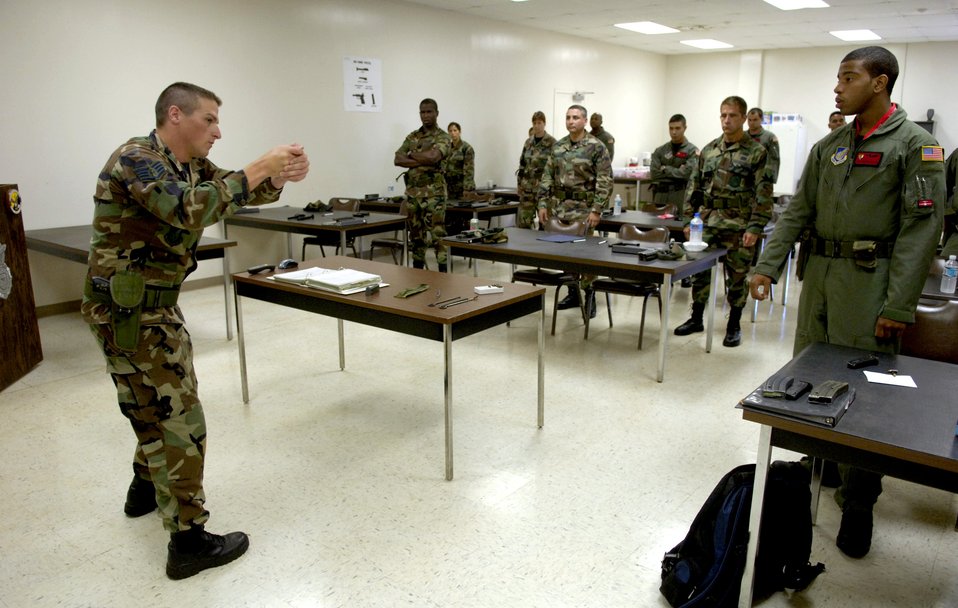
Staying proficient

Staff Sgt. Erik Sprague demonstrates proper standing techniques during his small-arms training class at the shooting range at Schoefield Barracks, Hawaii, on July 7. Sergeant Sprague is a combat arms training instructor from nearby Hickam Air Force Base.